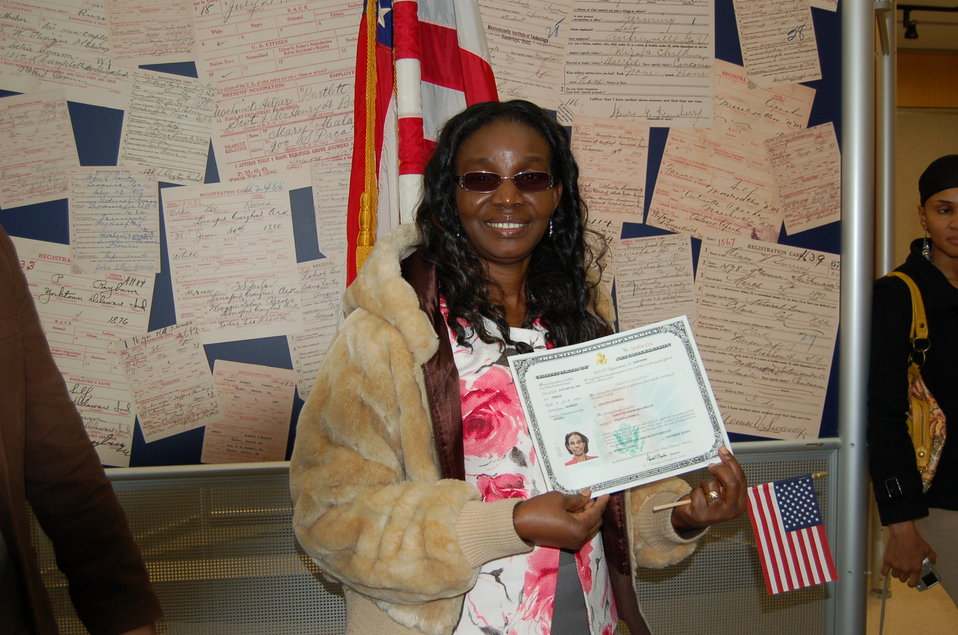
New Citizens